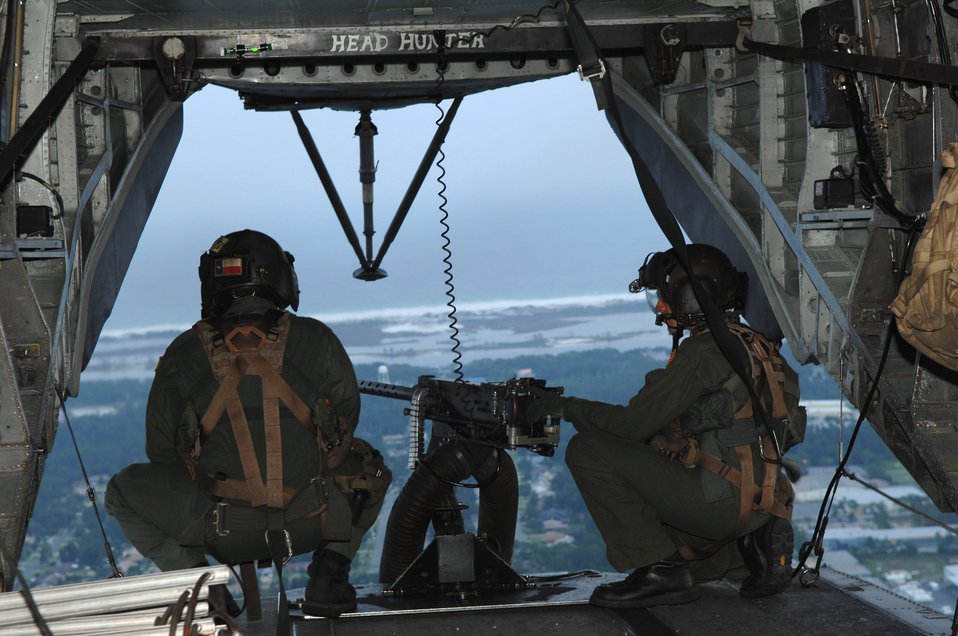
Keeping a watchful eye

Staff Sgt. Shawn Lewis and Senior Airman Paul Santilli perform air-to-ground reconnaissance Aug. 6 during a tactical night training mission over Eglin Air Force Base, Fla. The Airmen are with the 20th Special Operations Squadron.